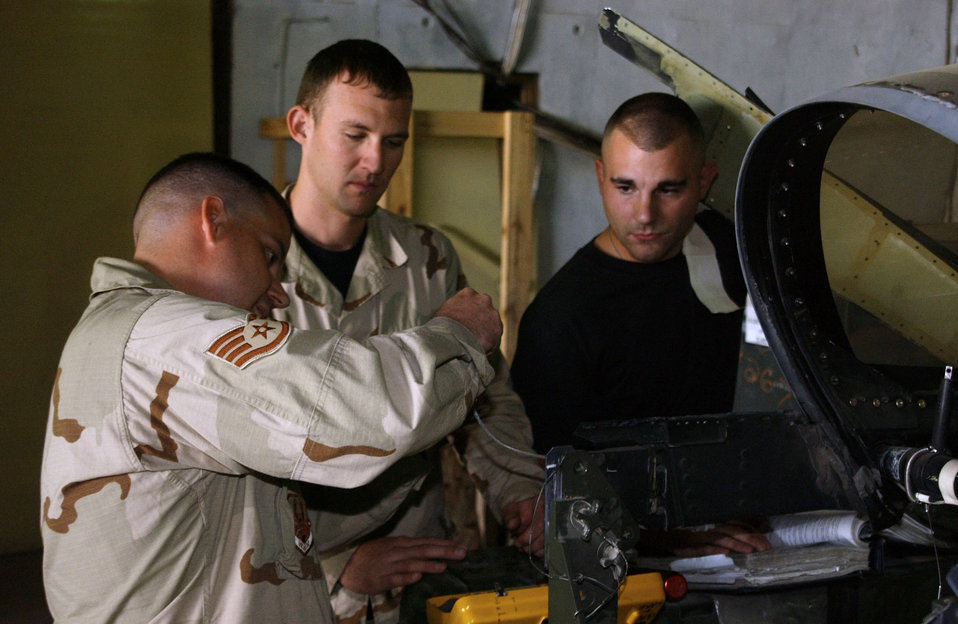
Egress maintainers give pilots a sense of security

Staff Sgt. Steven Rosenberg helps Senior Airmen Steven Graff and Mike Fire with a canopy inspection on an F-16 Fighting Falcon Oct. 10 at Balad Air Base, Iraq. The Airmen are assigned to the 332nd Expeditionary Maintenance Squadron.